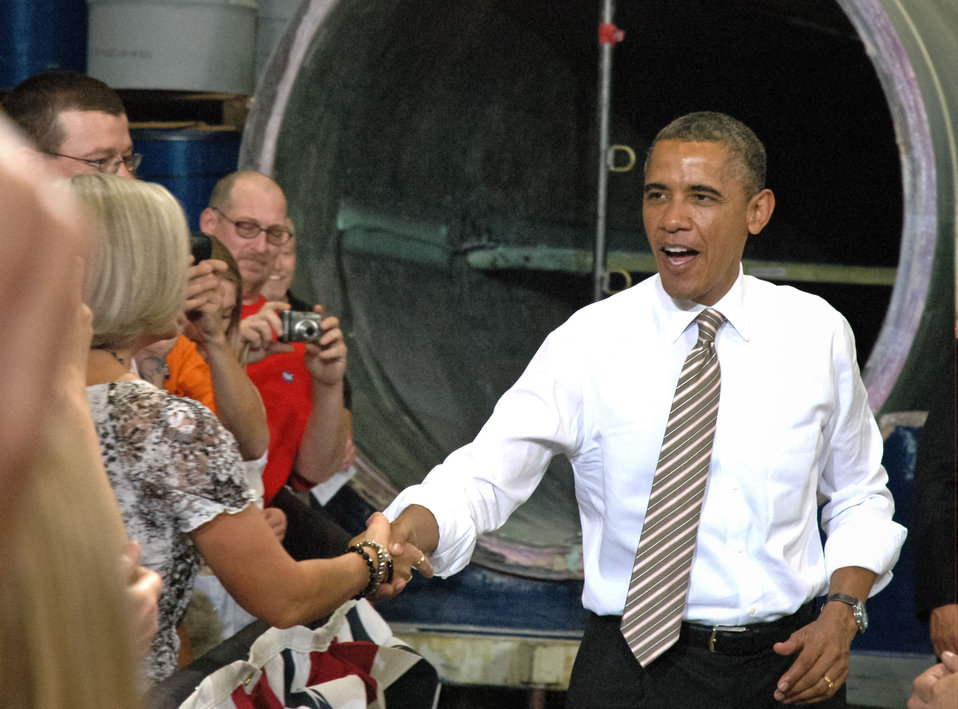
President Barack Obama greets a crowd of about 500 people at TPI, a maker of wind turbine blades that employs 700 people at its Newton, Iowa plant on Thursday, May 24, 2012.